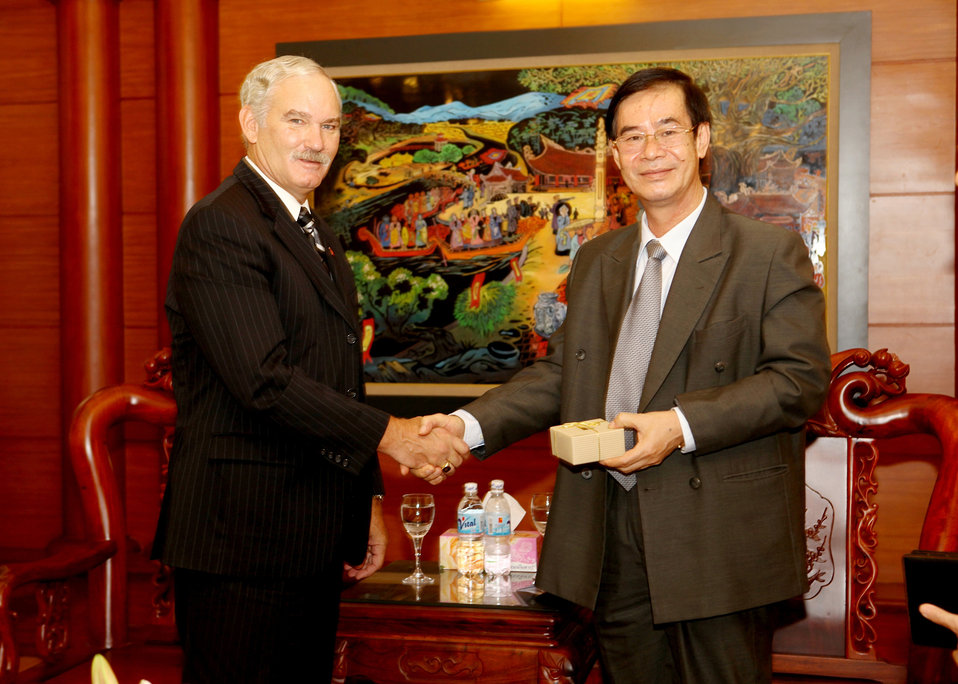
Acting Under Secretary for Farm and Foreign Agricultural Services Michael Scuse (left) meets Vietnam’s Vice Minister of Agriculture and Rural Development Diep Kinh Tan in Hanoi, VN, on September 25, 2011. As part of USDA’s trade mission to Vietnam, Scuse is meeting with Vietnamese government and agriculture officials and encouraging increased agricultural collaboration and trade between the United States and Vietnam.